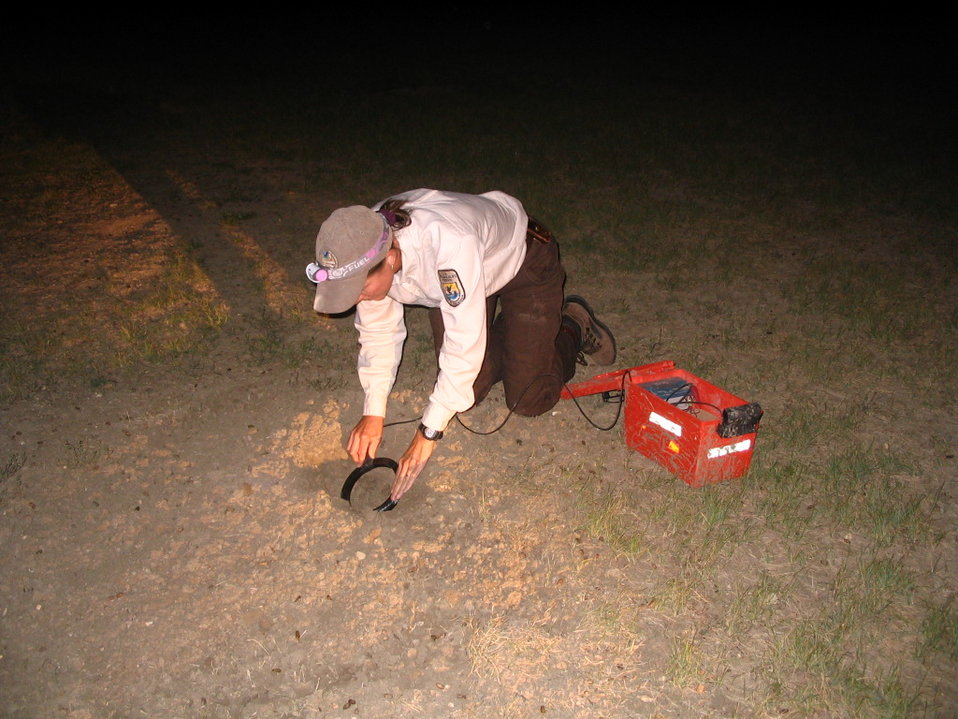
Finding Ferrets

A wildlife biologist sets a reader over a prairie dog hole. If a black-footed ferret tagged with a microchip emerges from the hole, the reader will identify the individual.